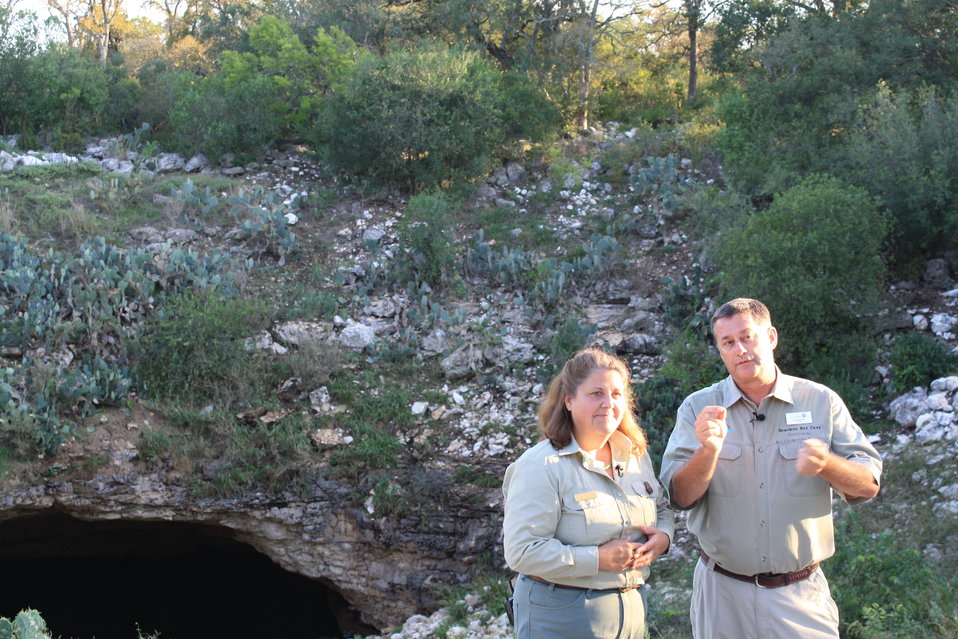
US Forest Service and BCI staff during broadcast

US Forest Service staff Sandy Frost and BCI staff Fran Hutchins during BatsLIVE broadcast